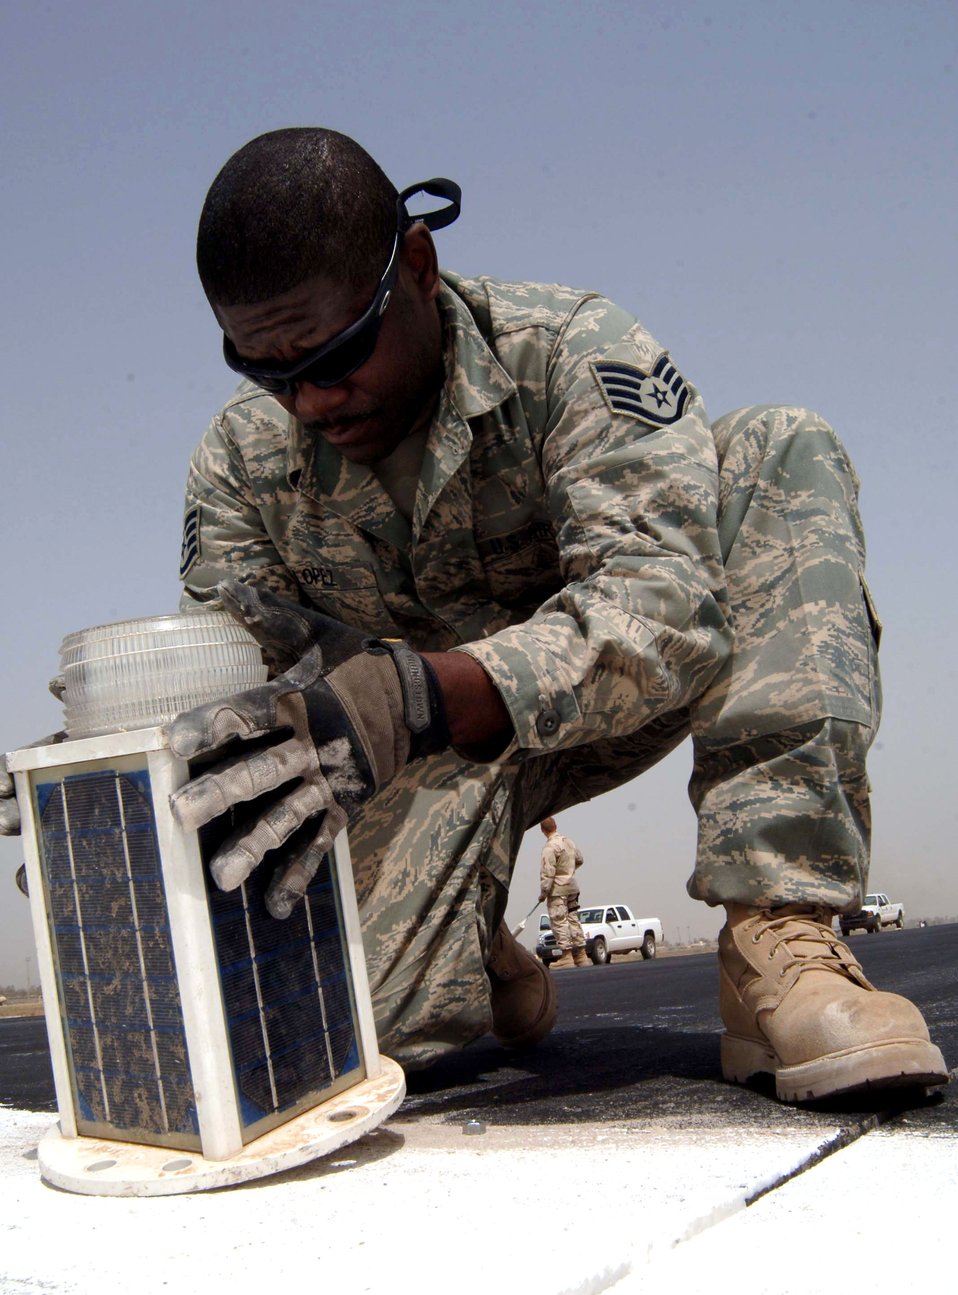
Drawing a line in the desert

Staff Sgt. Larry Lopez positions a threshold light on the Baghdad International Airport runway May 30 in Iraq. These threshold lights are being installed temporarily to shorten the runway by 3,000 feet so repairs can be made. Sergeant Lopez is a 447th Expeditionary Civil Engineer Squadron electrician.